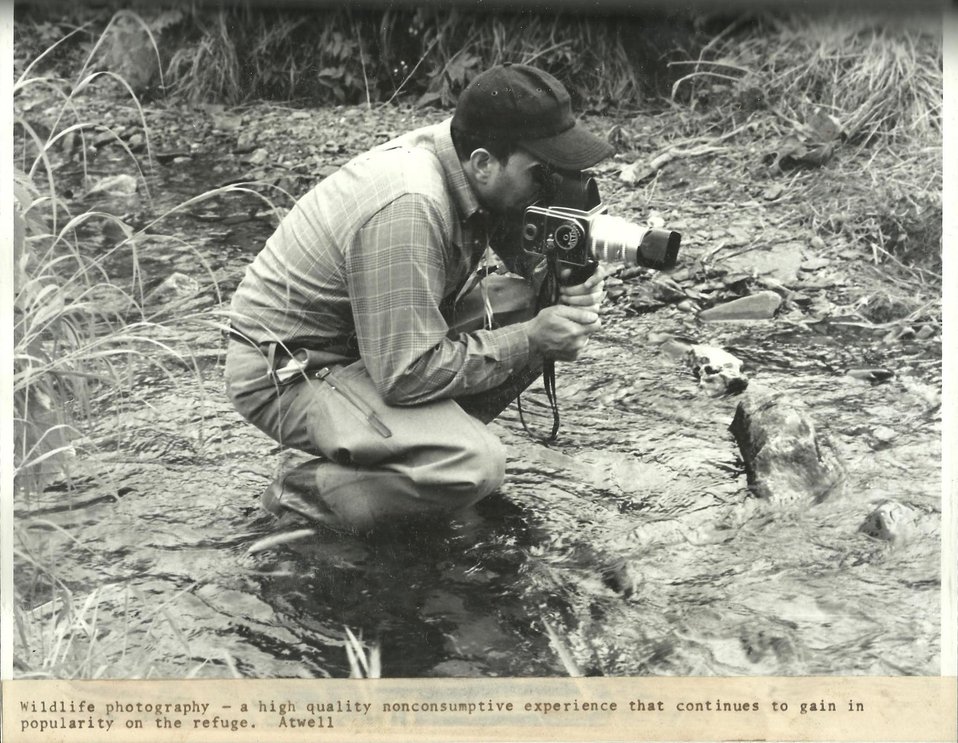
(1971) Nonconsumptive Experience

Credit: USFWS

Source and Contact: Kodiak National Wildlife Refuge